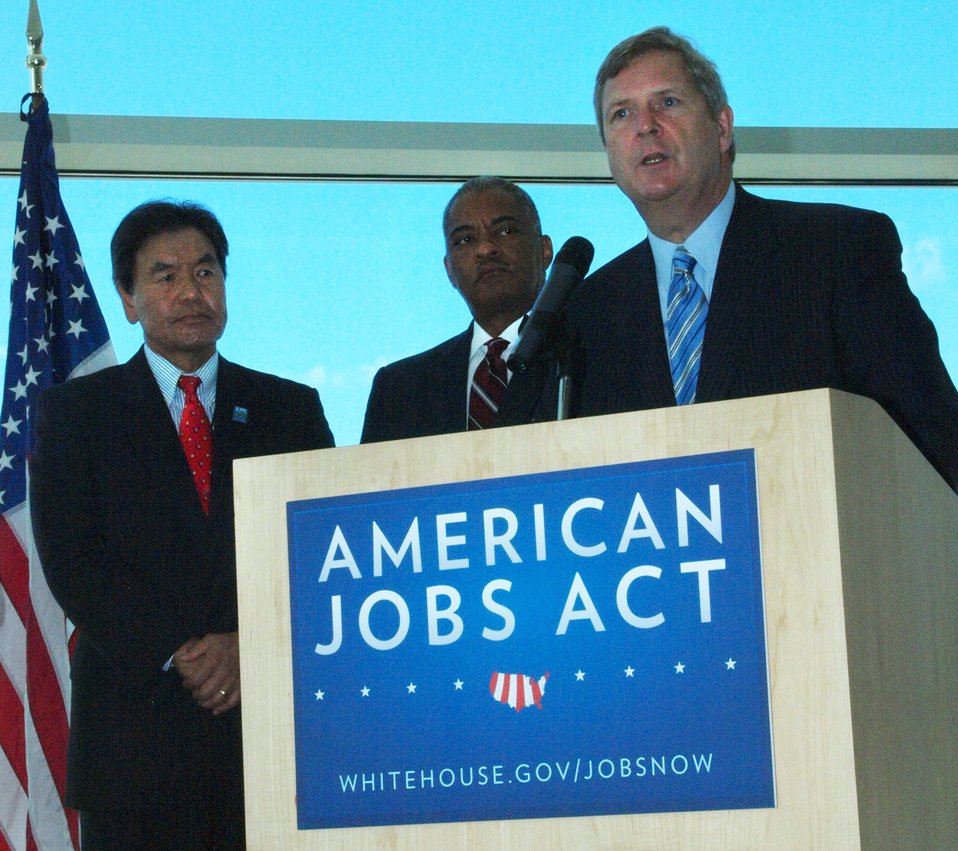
Agriculture Secretary Tom Vilsack speaking at a White House Business Council event highlighting the American Jobs Act at the airport in Seattle, WA, on Wednesday, September 28, 2011.